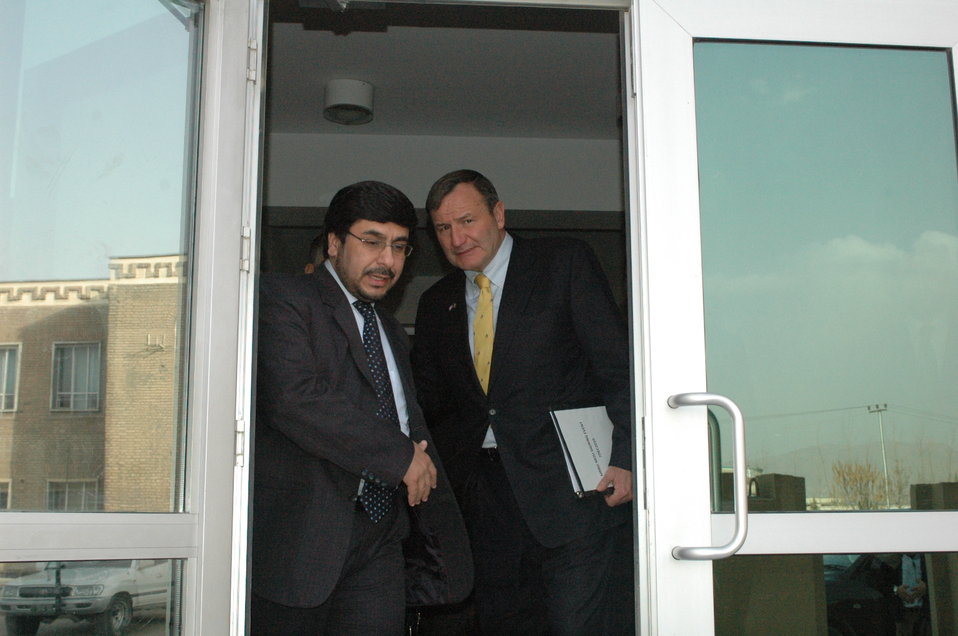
Community Based Stabilization Grants Ceremony, December 7, 2010